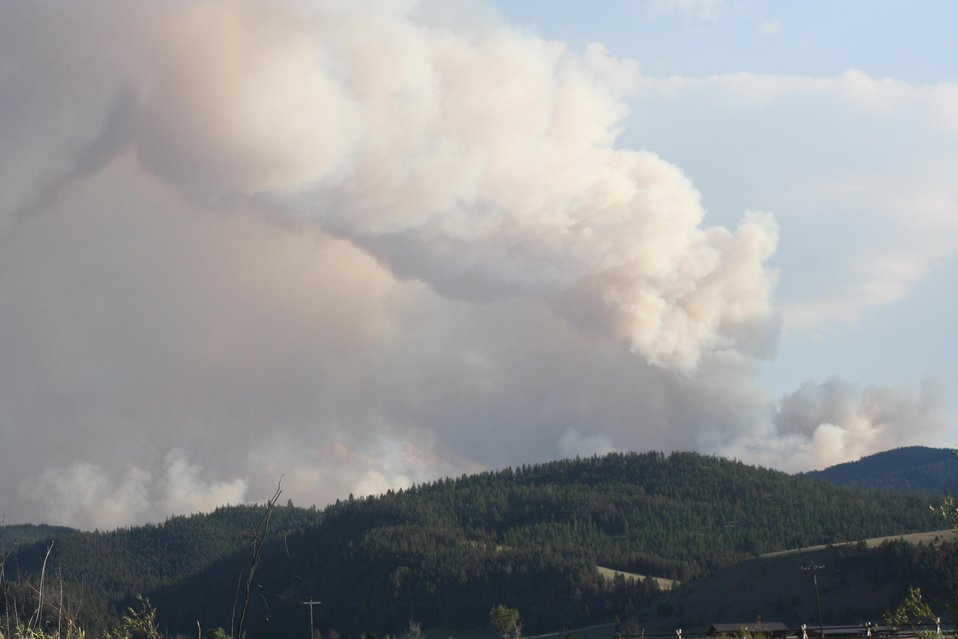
The Moose Meadow Fire in the Beaverhead-Deerlodge National Forest near Philipsbug, MT began on Jul. 25, 2013 by lightning has consumed approximately 3,400 acres and is approximately 30% contained.